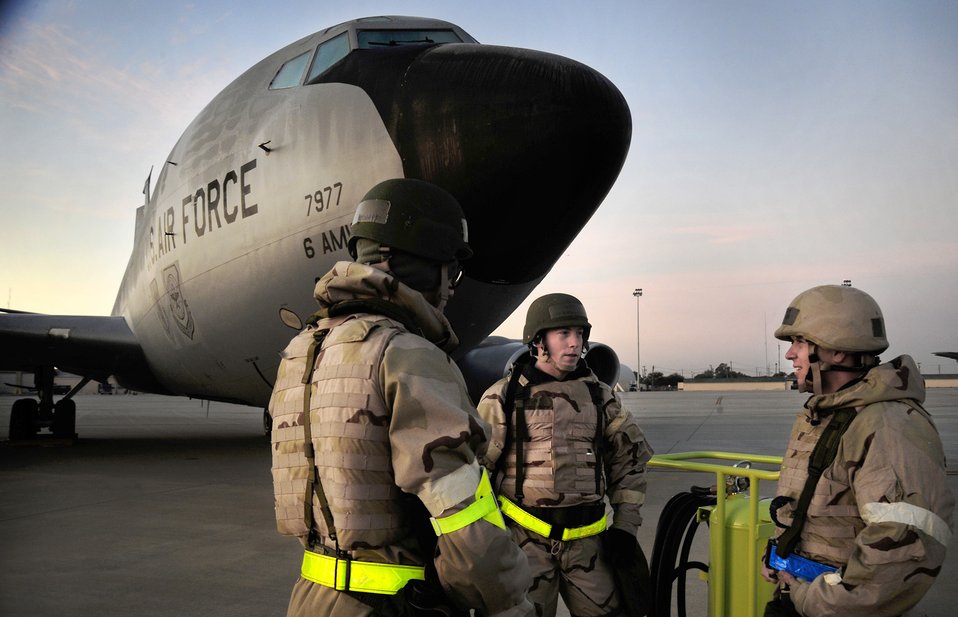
KC-135 Stratotanker maintenance

Staff Sgt. David Peralta (right) discusses upcoming KC-135 Stratotanker maintenance operations with Senior Airman Russell Greaver and Senior Airman Kyle Snodgrass Jan 27, 2011, during an operational readiness inspection at the Savannah Combat Readiness Training Center in Savannah, Ga. All three Airmen are assigned to the 112th Aircraft Maintenance Squadron.